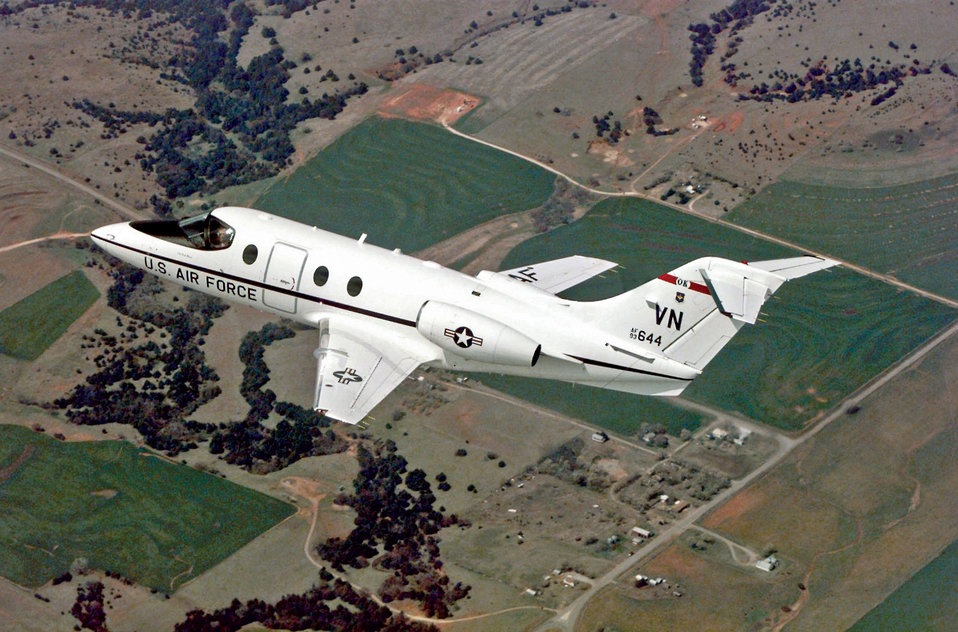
T-1 Jayhawk

VANCE AIR FORCE BASE, Okla. -- An air-to-air view of a T-1 Jayhawk during a training mission.